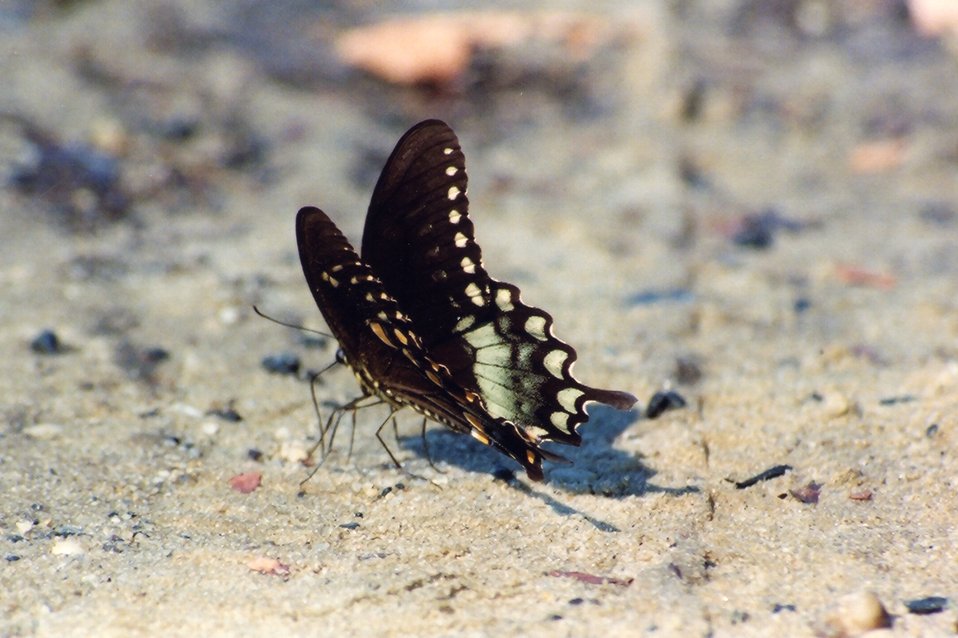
Butterfly on the beach.